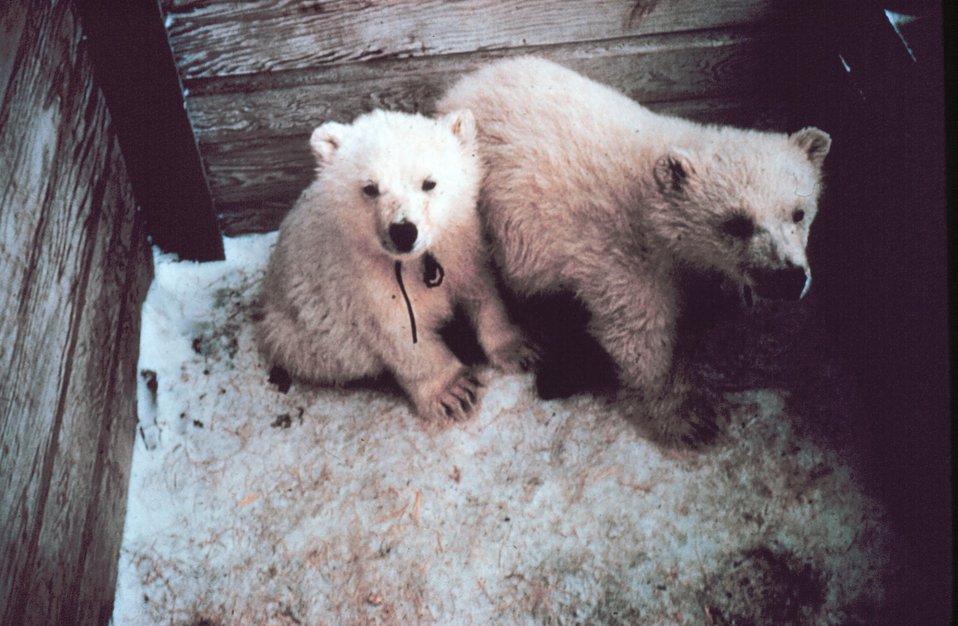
Orphaned polar bear cubs - Ursus maritimus - being sent to zoo.